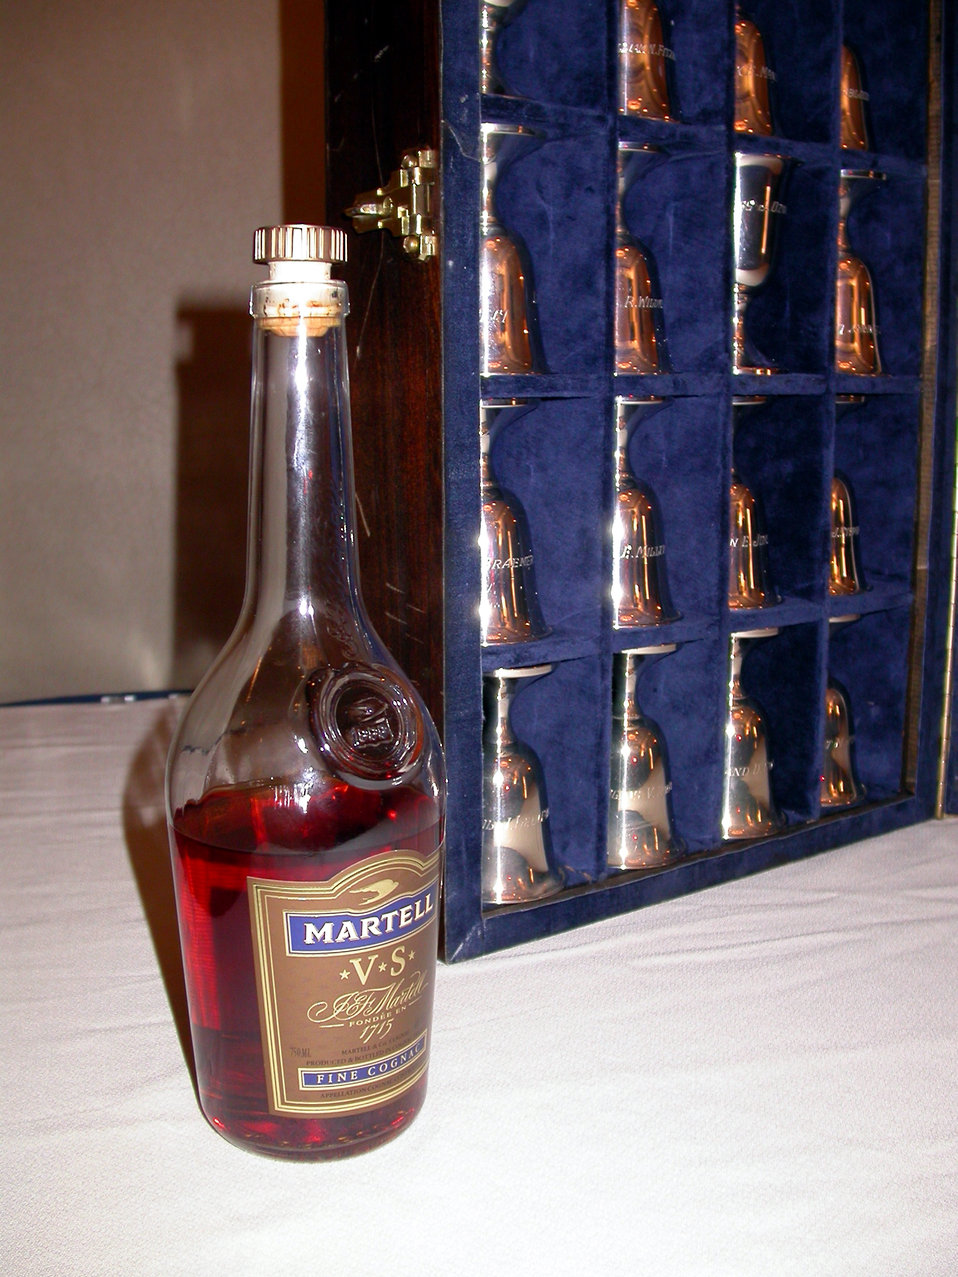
Traditional goblet ceremony

TRAVIS AIR FORCE BASE, Calif. -- The Doolittle Raiders held their traditional goblet ceremony here April 16 during the group's 61st annual reunion. During the goblet ceremony, the men toast with cognac and then turn over the goblets of those who died since the last meeting.